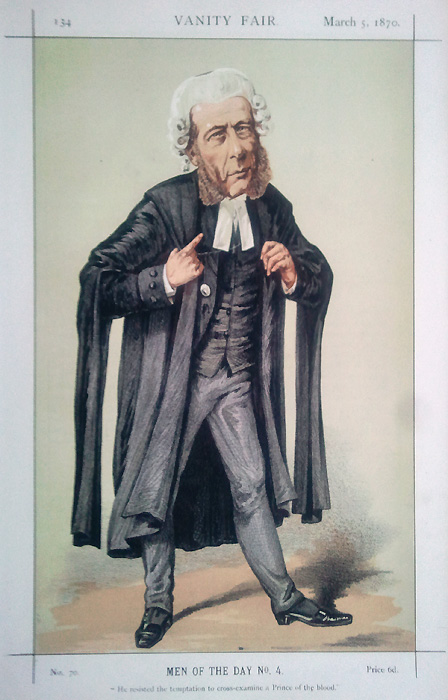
Caricature of William Ballantine. Caption reads 'He resisted the temptation to cross-examine a Prince of the blood'.